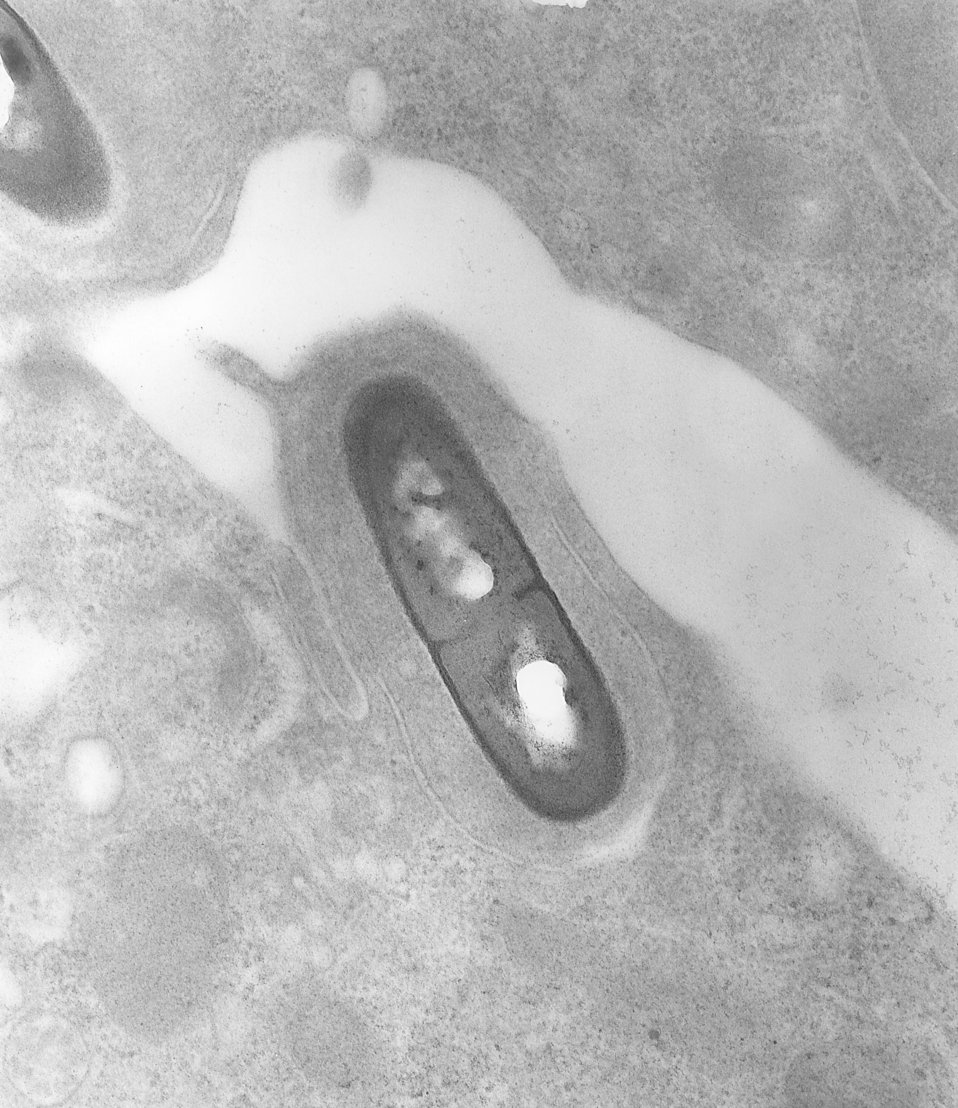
Electron micrograph of a Listeria bacterium in tissue. See PHIL 10828 for a colorized version of this image.